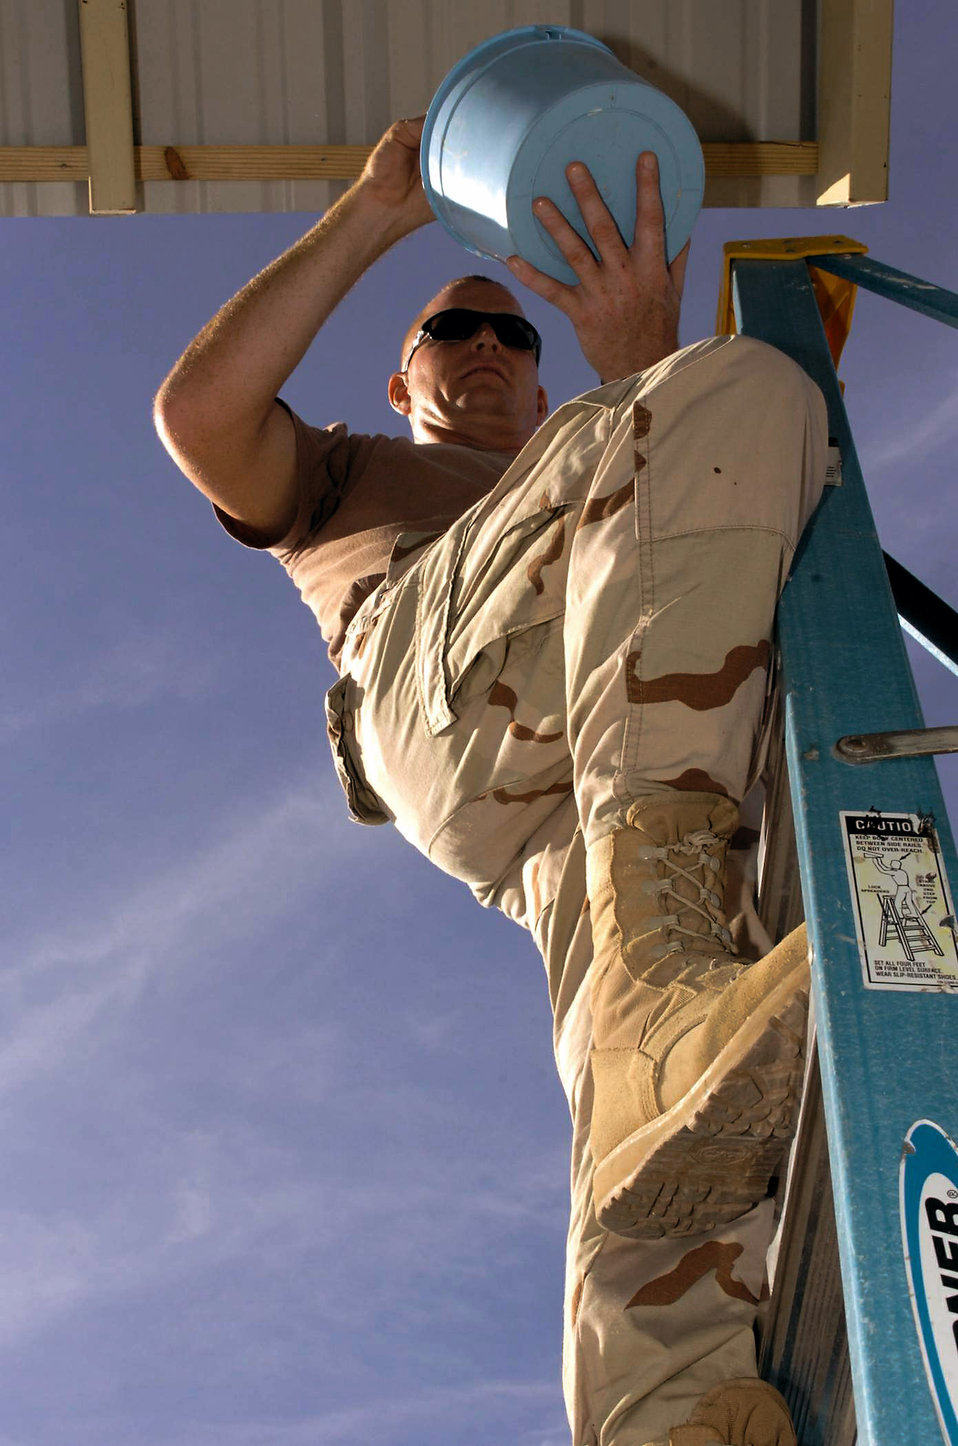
Finishing touches

Technical Sgt. Chris Pratt puts the finishing touches on a sun shade outside the Expeditionary Legal Complex Jan. 16 at Guantanamo Bay, Cuba. Sergeant Pratt and members of the Joint Task Force Guantanamo's 474th Expeditionary Civil Engineering Squadron structures team completed several construction projects around Naval Station Guantanamo Bay. JTF Guantanamo conducts safe, humane, legal and transparent care and custody of detained enemy combatants, including those convicted by military commission and those ordered released.